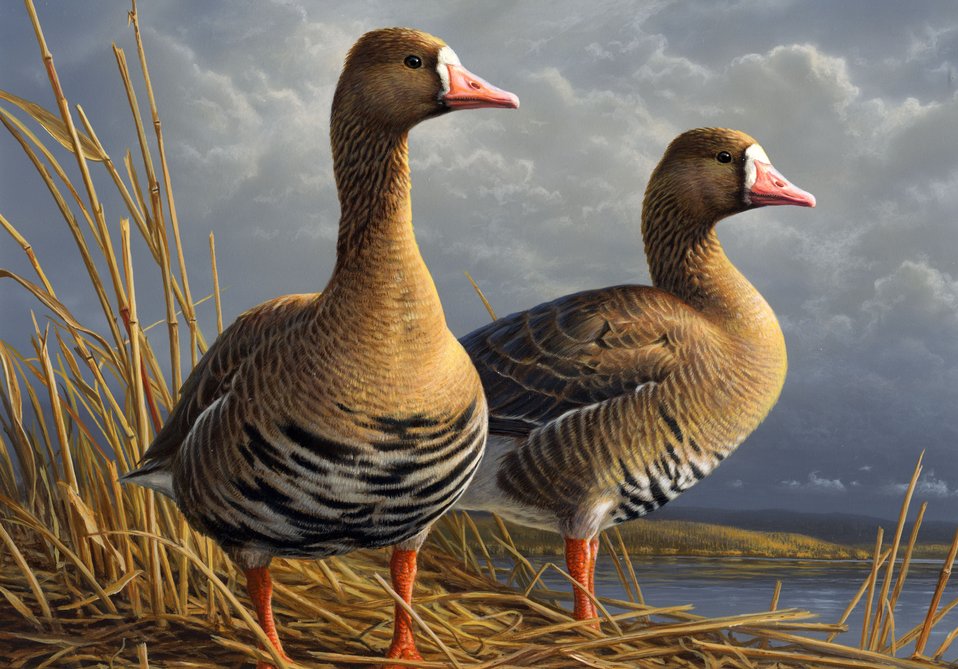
Photo of the Week: 2010 Federal Duck Stamp Winning Painting, James Hautman, an artist from Chaska, Minnesota

James Hautman, an artist from Chaska, Minnesota, has been named the winner of the 2010 Federal Duck Stamp Art Contest. The announcement was made today at the David Brower Center in Berkeley, Calif., during the annual competition hosted by the U.S. Fish and Wildlife Service. Hautman has previously won the Duck Stamp three times, in 1989, 1994 and 1998. Photo Caption: 2010 Federal Duck Stamp Art Contest winner. Credit: James Hautman from Chaska, Minnesota